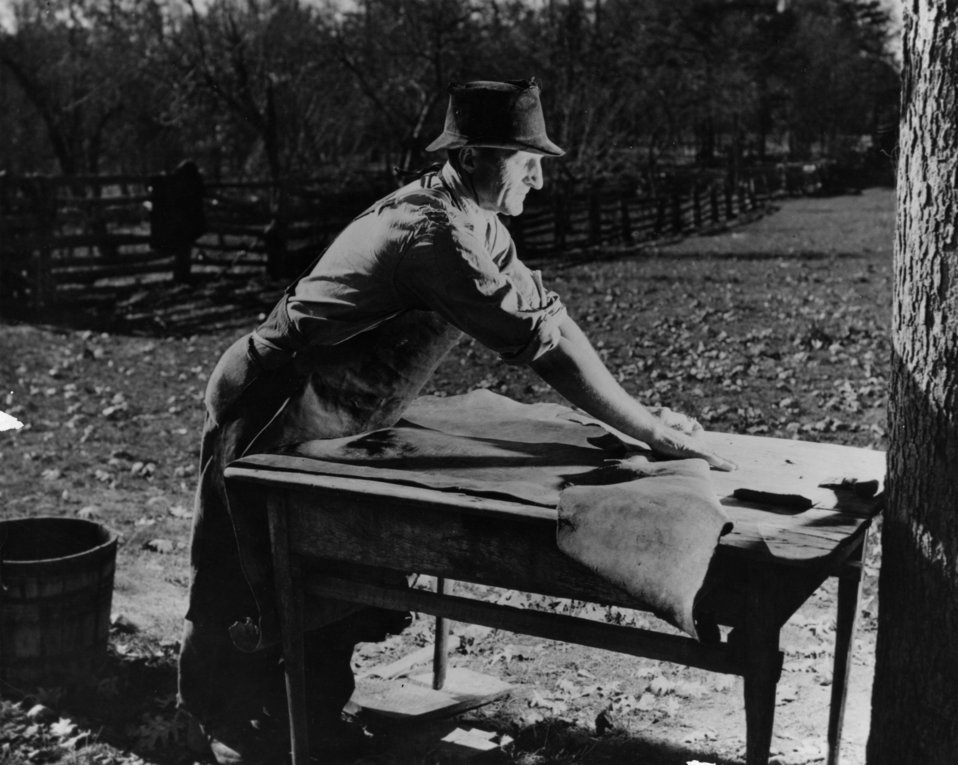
Early settlers at Oak Ridge